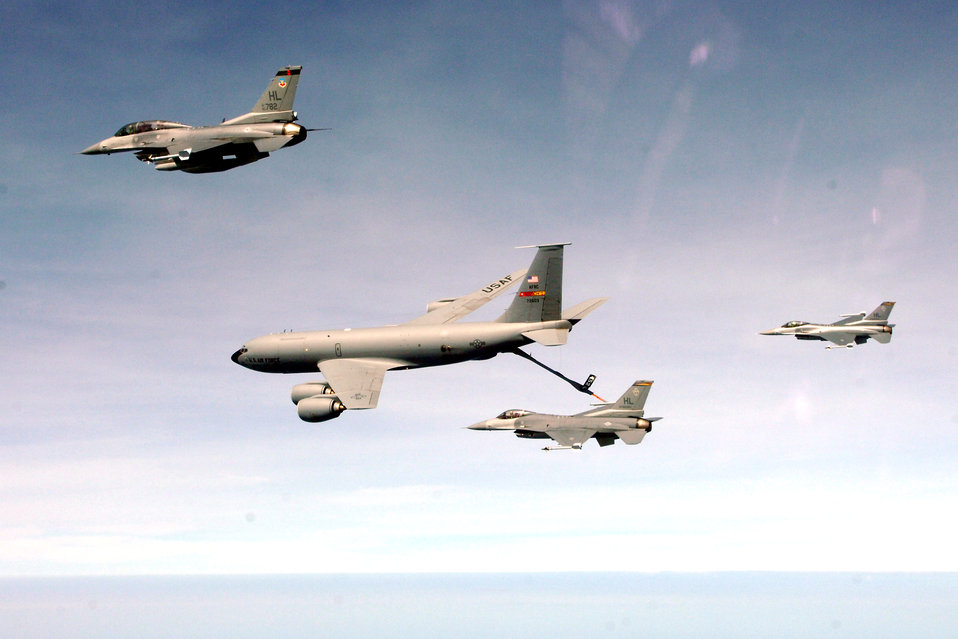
Airmen work alongside Peruvian military during joint exercise

An F-16 Fighting Falcon refuels from a KC-135 Stratotanker over Peru in support of the Falcon and Condor 2007, a joint exercise between the U.S. and Peruvian Air Forces. The exercise allows the U.S. military to build relationships with military and civilian leaders of Peru. The F-16 is from the 34th Fighter Squadron at Hill Air Force Base, Utah, and the KC-135 is assigned to the 336th Air Refueling Squadron at March Air Reserve Base, Calif.